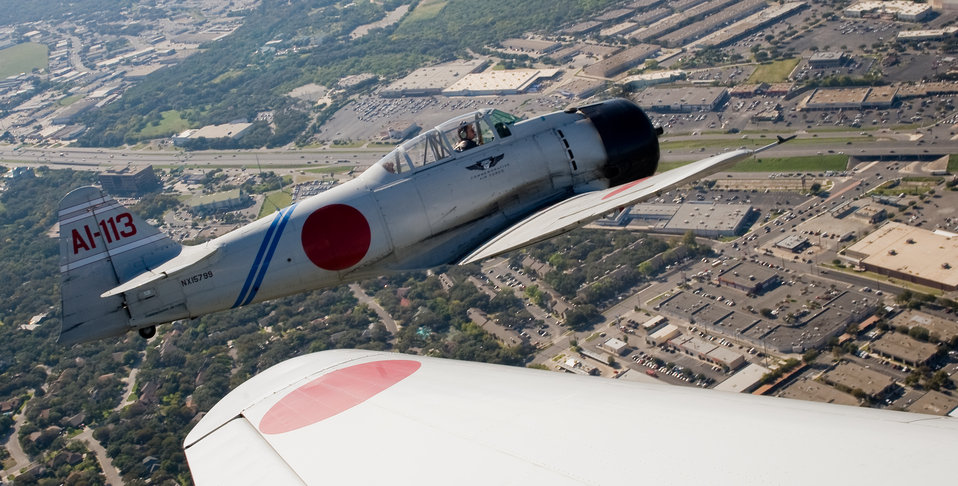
Warrior Flight

Japanese A6M2 Zero replica built from North American Aviation T-6 Texan (N4447) over San Antonio, Texas on Nov. 5, 2009 . Disabled American Veterans (DVA) Flight Team organized flights aboard historic and experimental air show aircraft for wounded warriors from the Warrior Transition Unit of the San Antonio Military Medical Center at Fort Sam Houston, Texas, two days before the Randolph Air Force Base Forging the Future Air Show. DAV a non-profit organization that provides services in support of disabled veterans is not endorsed by the U.S. Air Force. 20th Century Fox had several made for the movie Tora, Tora, Tora and Midway. After the movies collectors bought the planes, Tora, Tora, Tora bought these and have used them for 37 seasons of WWII attack performances. DAV is a non-profit organization that provides services in support of disabled veterans Tora, Tora, Tora nor DAV are endorsed by the U.S. Air Force.